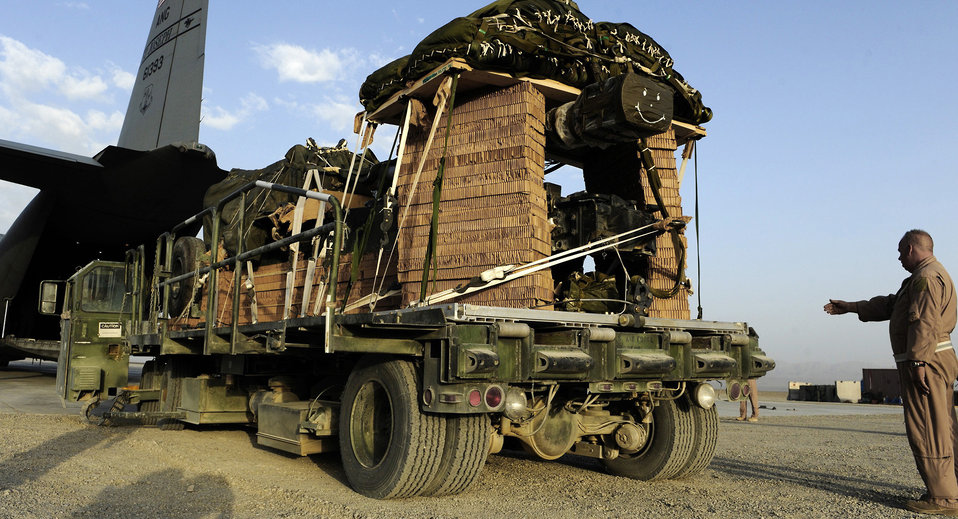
Total-force team airdrops 10-ton artillery load

Senior Master Sgt. Kevin Gifford loads a 10-ton pallet aboard a C-130 Hercules Aug. 8 at Bagram Airfield, Afghanistan. Sergeant Gifford and an Army and Air Force aircrew from the 774th Expeditionary Airlift Squadron delivered an M198 howitzer artillery piece to a forward operating base in Afghanistan. The 36-foot long cannon will give troops the ability to send high-explosive shells at insurgents threatening the peace and security of the Paktika Province. Sergeant Gifford is a New York Air National Guard member from Schenectady, N.Y.